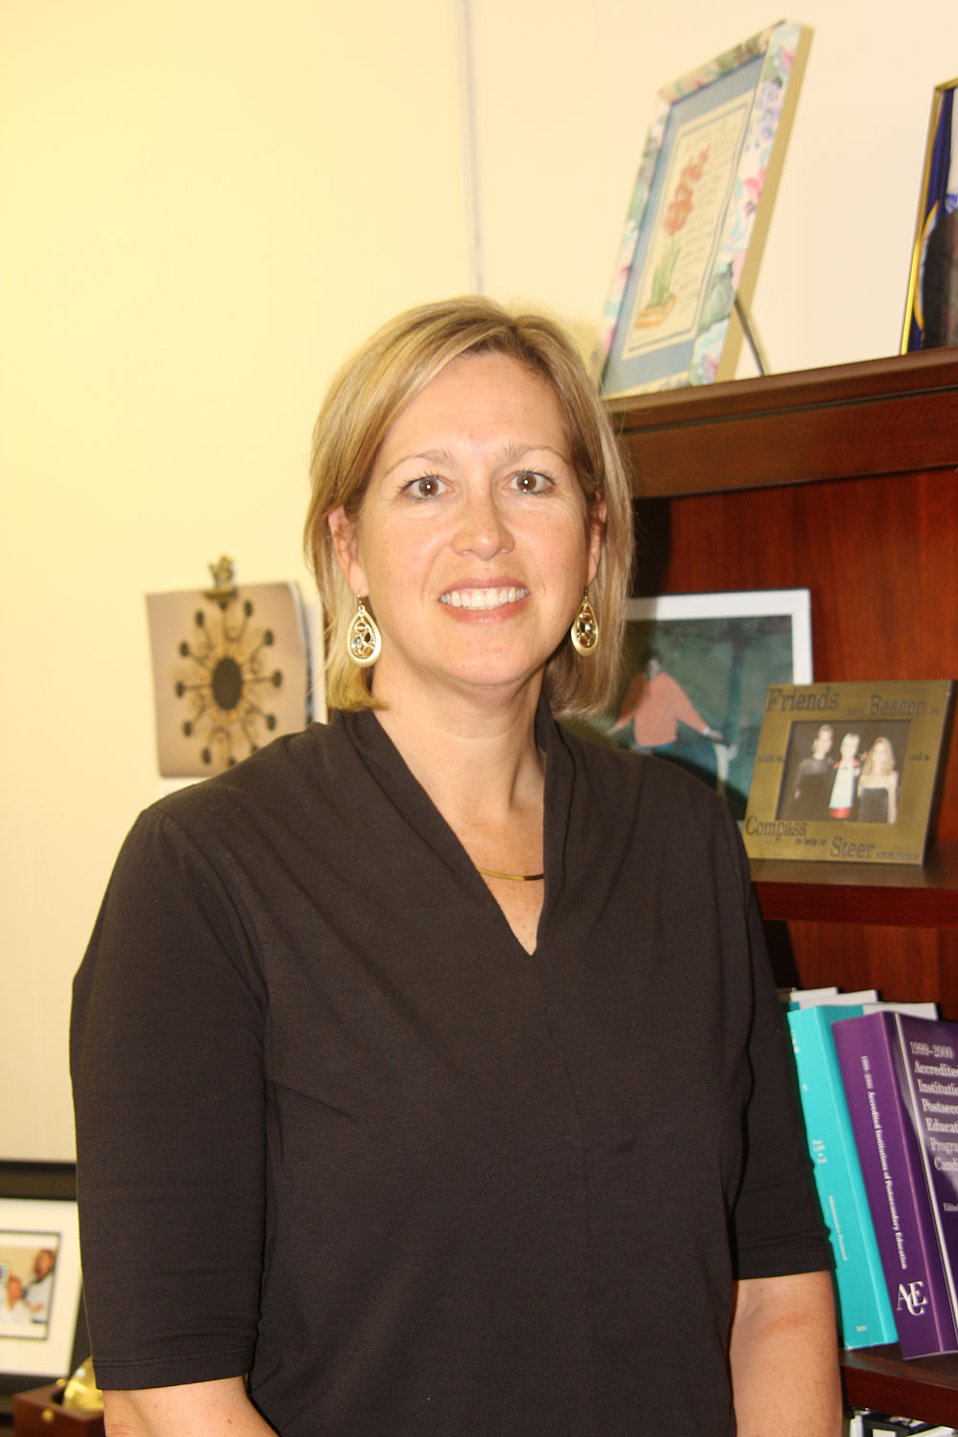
Anne Hammond joined the Fish and Wildlife Service after serving 25 years of Active duty with the Navy. Her entire career was in HR. Hammond just celebrated her one-year anniversary with the Service in September and has really enjoyed the experience and the challenges. On comparing her experience in HR, Hammond says, “DOD is more driven -- based on world events. Here we are focused on land and resources in our own backyard and that is nice.” She also compared her HR experience indicating the concepts are the same, but the terms are different. She adds, “It was like learning a new language.” Hammond is the Chief of the Division of Human Resources in the Southwest Region.